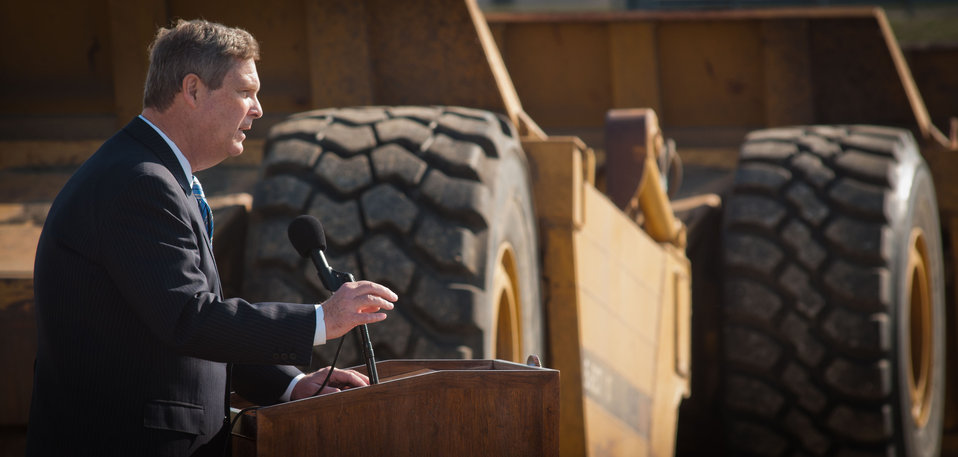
U.S. Department of Agriculture Secretary Tom Vilsack, visited a recently completed transportation project that extended the existing MacArthur Boulevard and new interchange with Interstate 72, that brought new businesses and 500 new jobs to Springfield, IL on November 2, 2011. Agriculture Secretary Tom Vilsack spoke in front of a harvested farm field at the interchange The Administration's strategy to strengthen the U.S. economy and to highlight what passage of the American Jobs Act will mean for Illinois. 'The American Jobs Act provides common-sense steps we can take right now to put more people back to work and put more money in the pockets of working Americans, without adding a dime to the deficit,' said Secretary Vilsack. 'In Illinois, this Act will provide a tax cut for over 260,000 businesses, support the jobs of 14,500 teachers and first responders and immediately provide a job for over 20,700 construction workers through infrastructure improvements. A typical household in Illinois will receive a tax cut of around $1,640.'